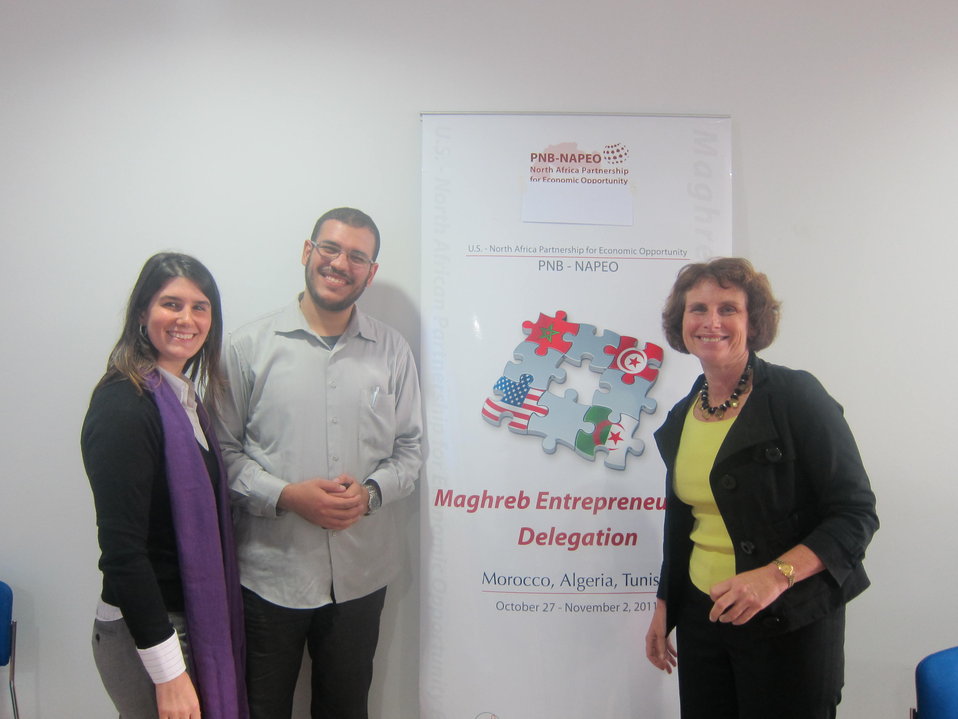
Special Representative Hariton Poses for a Photo With Special Represenative Hariton Poses for a Photo With Algerian Tech Town Winner Benali and Officer Egan

Special Representative for Commercial and Business Affairs Lorraine Hariton, right; poses for a photo with Youghourta Benali, Maghreb Delegation in Algeria winner and founder of Walletix, center left; and Economic Officer Julie Egan, left; in Algiers, Algeria, on October 30, 2011.